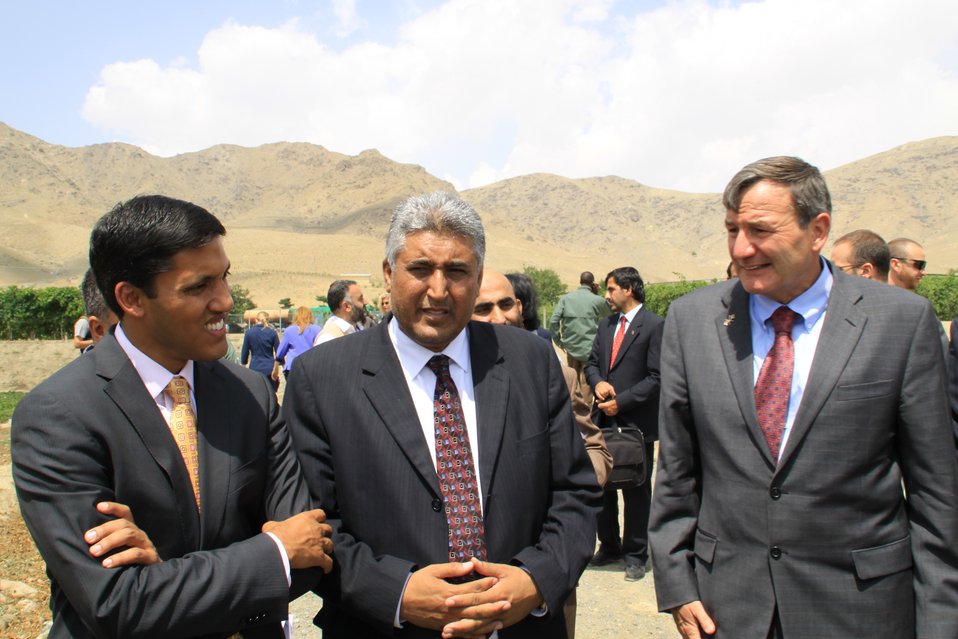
Badam Bagh Farm